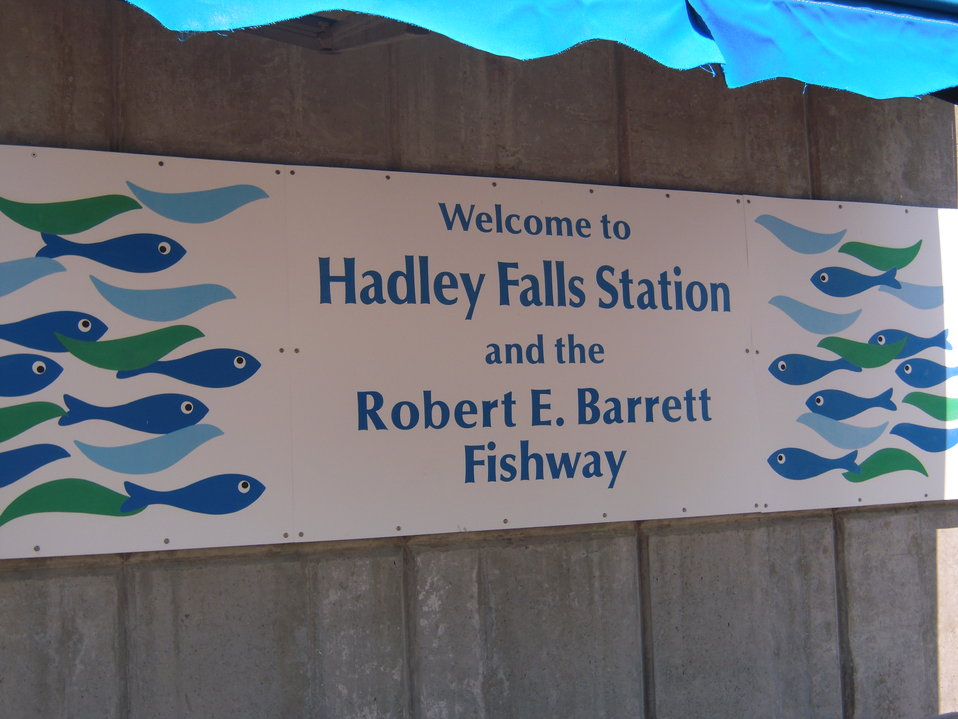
Arrive at at Hadley Falls Station